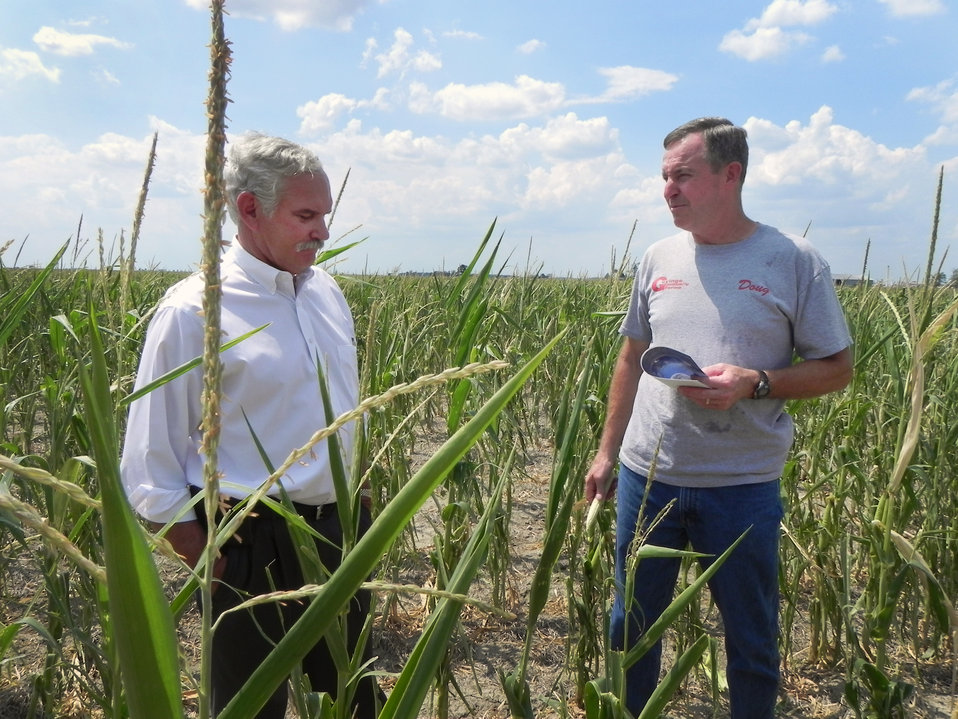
Agriculture Under Secretary for Farm and Foreign Agricultural Service (FFAS) Michael Scuse (right) tours a drought stricken corn field with Doug Goyings, on the Goyings farm in Paulding County, OH on Tuesday, July 17, 2012. Agriculture Secretary Vilsack has instructed Agriculture subcabinet leaders to travel to affected drought areas to augment ongoing assistance from state-level U.S. Department of Agriculture (USDA) staff and provide guidance on USDA’s new, streamlined disaster process. The U.S. Drought Monitor currently reports that 61 percent of the continental United States is in a moderate to exceptional drought.